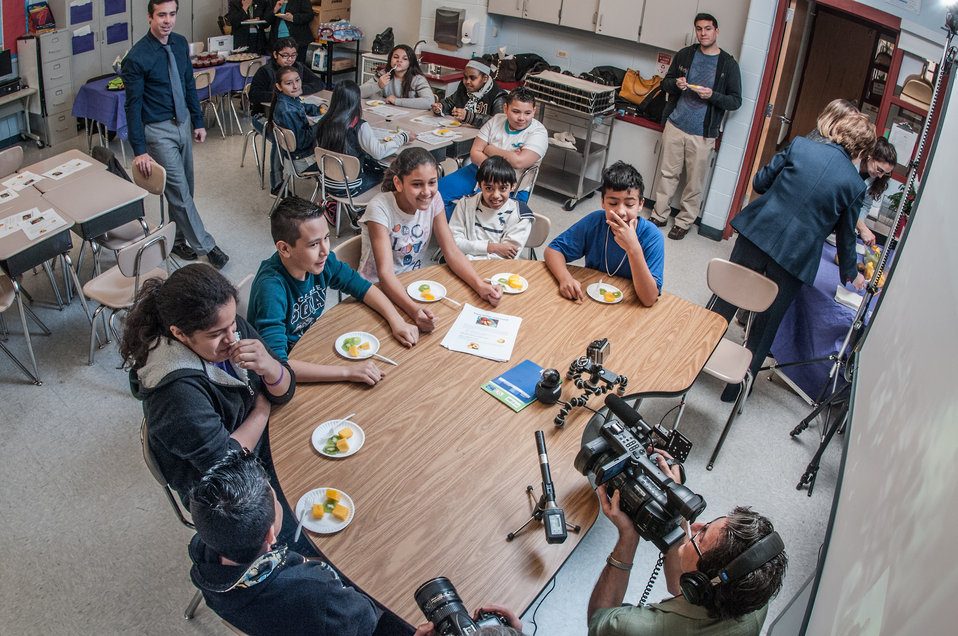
Harmony Hills Elementary School 5th graders share their tasting experience of mangos and kiwi, with Dalry Primary School students, in North Ayershire, Scotland, United Kingdom, using a live overseas video connection, during the inaugural International School Meals Day (ISMD) at Harmony Hills Elementary School in Silver Spring, MD, on Friday, March 8, 2013. The ISMD has 14 classrooms (grades 3-8) in the U.S. connected with 14 classrooms in Scotland. USDA plans to expand the initiative to include partnerships with additional countries in future years. USDA's Food and Nutrition Service oversees the administration of 15 nutrition assistance programs that work in concert to form a national safety net against hunger. Learn more by visiting www.fns.usda.gov and twitter @USDANutrition.